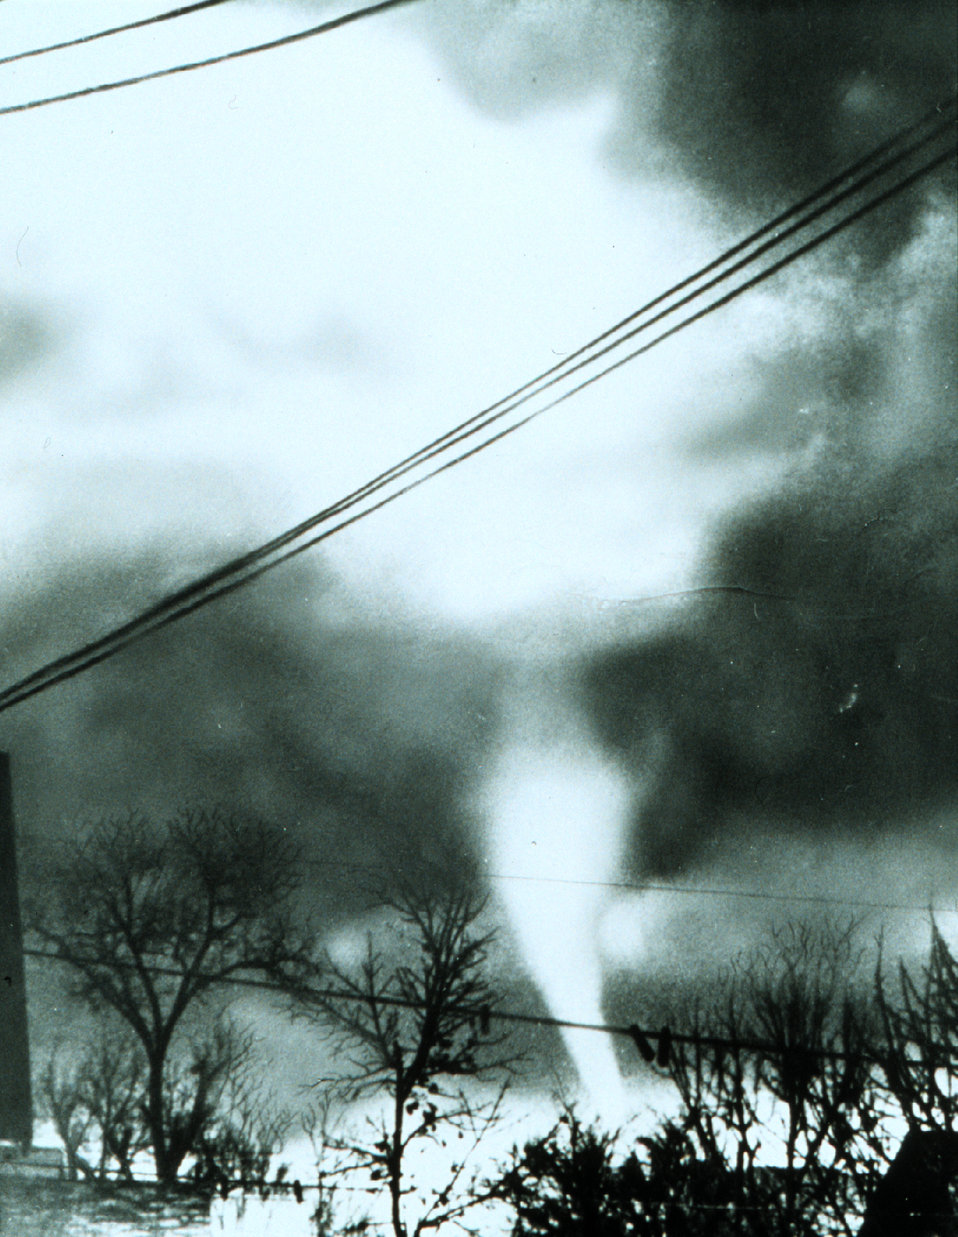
Tornado in the Tennessee Valley